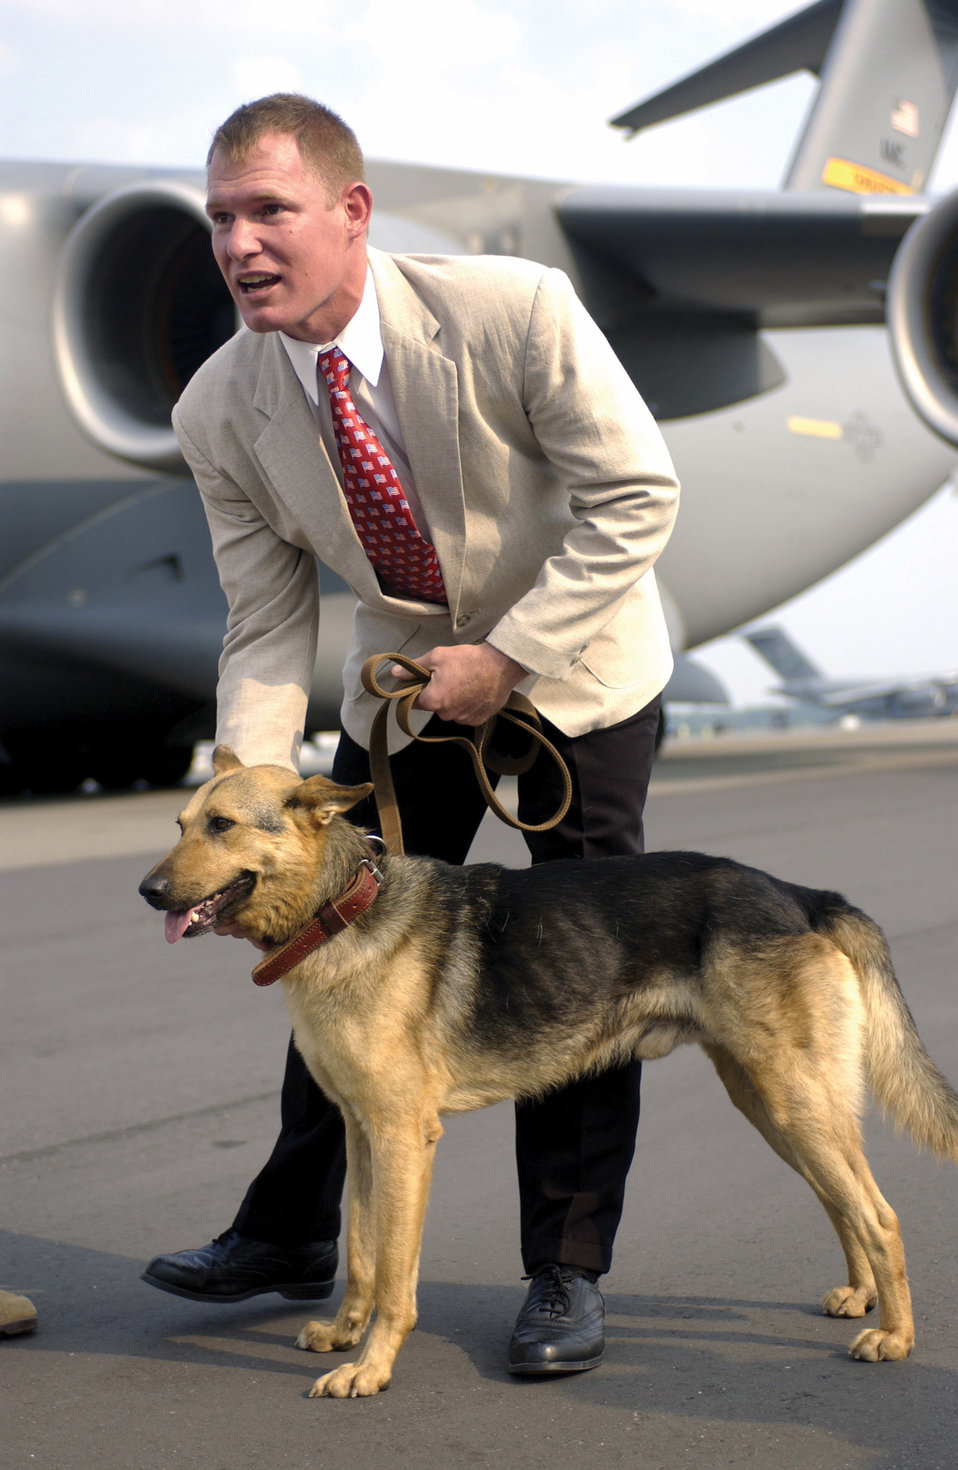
Fluffy

CHARLESTON AIR FORCE BASE, S.C. -- Army Sgt. 1st Class Russell Joyce is reunited with his former partner, Fluffy, on the flightline here. Fluffy put his life on the line guarding U.S. special forces and received permission to immigrate to the United States.